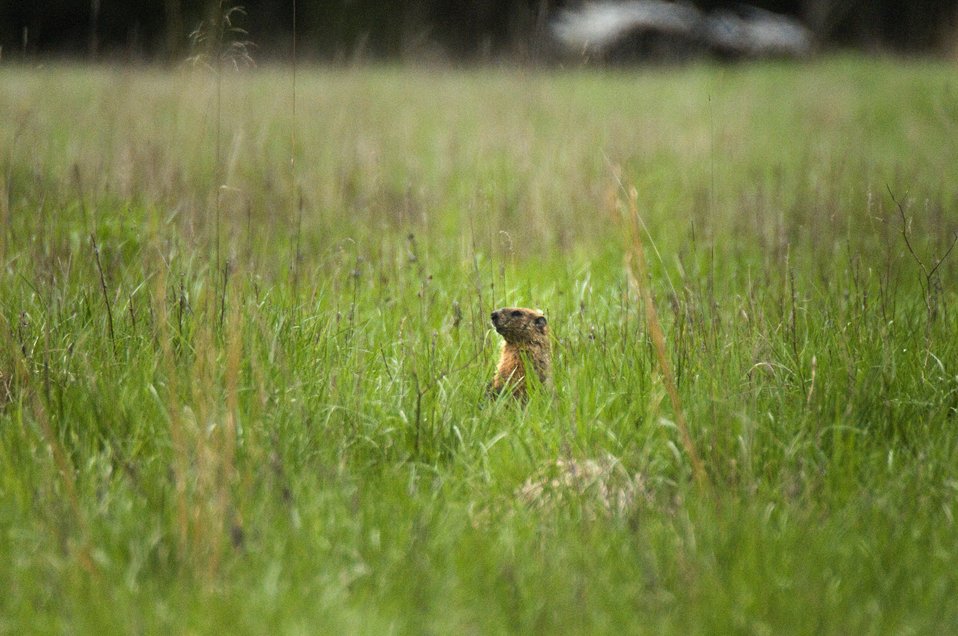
A gopher on the campus of Brookhaven National Laboratory.